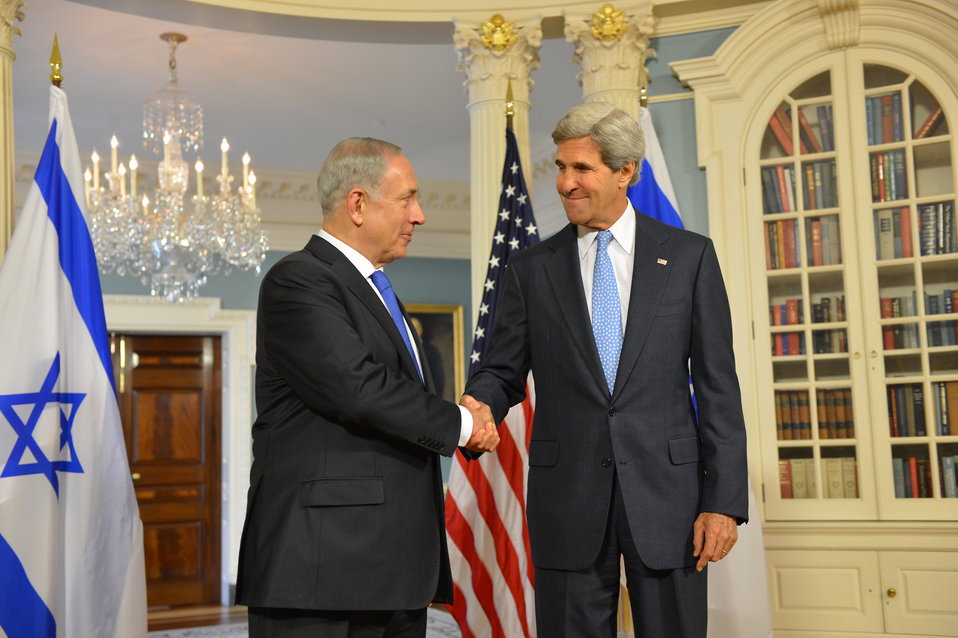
Secretary Kerry Meets With Israeli Prime Minister Netanyahu

U.S. Secretary of State John Kerry meets with Israeli Prime Minister Benjamin Netanyahu at the U.S. Department of State in Washington, D.C., on September 30, 2013.